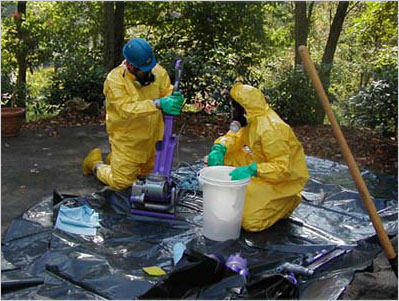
Mercury cleanup

Superfund responders clean a vacuum contaminated with mercury in Waynesville, North Carolina.